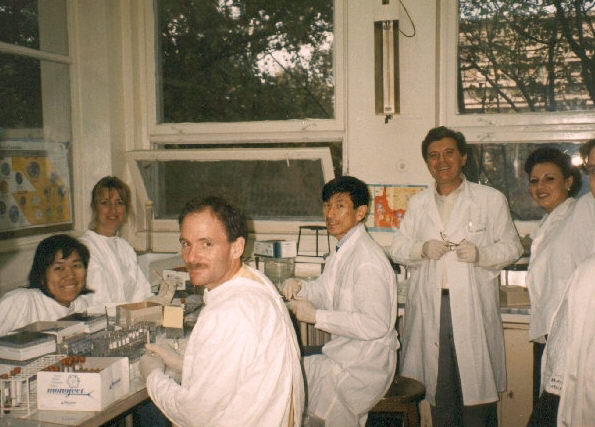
Investigators of West Nile fever outbreak in Romania.